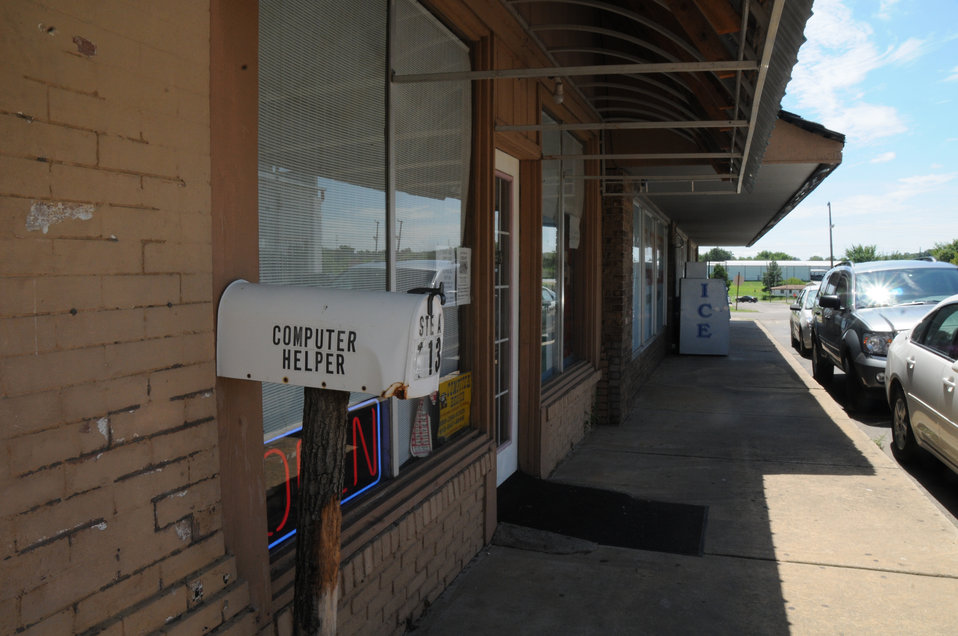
A side street in downtown Poteau, OK sits in shadow on August 11, 2009.